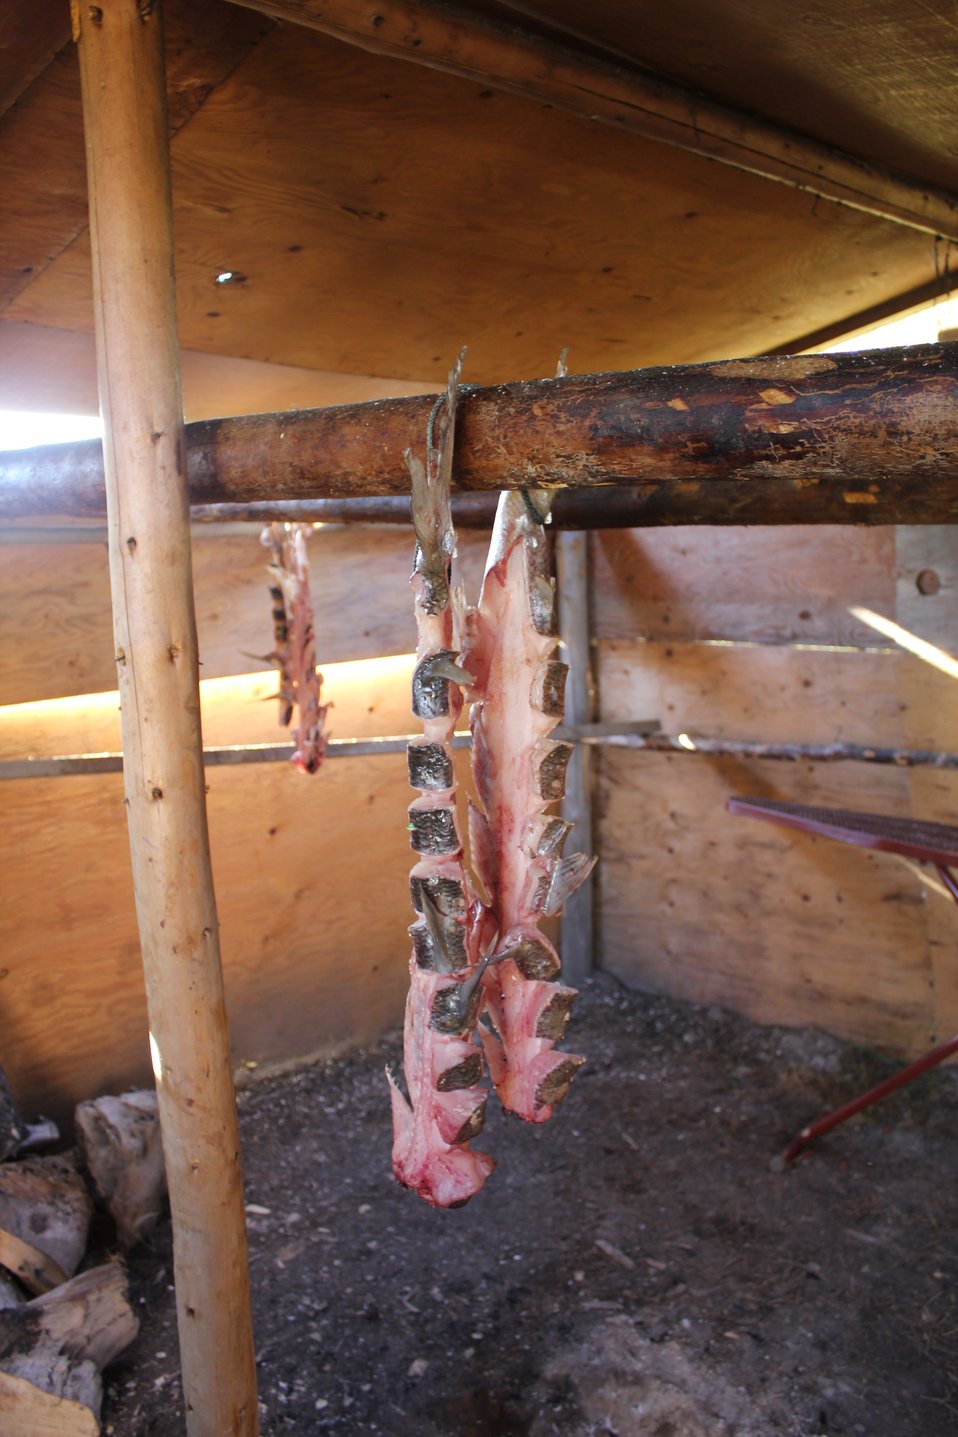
Curing 'coney' fish by smoking. The name is a corruption of the French term 'poisson inconnu' for an unknown fish which is phonetically similar. Inconnu is also the common name for (Stenodus leucichthys) is a species of freshwater whitefish of the family Salmonidae